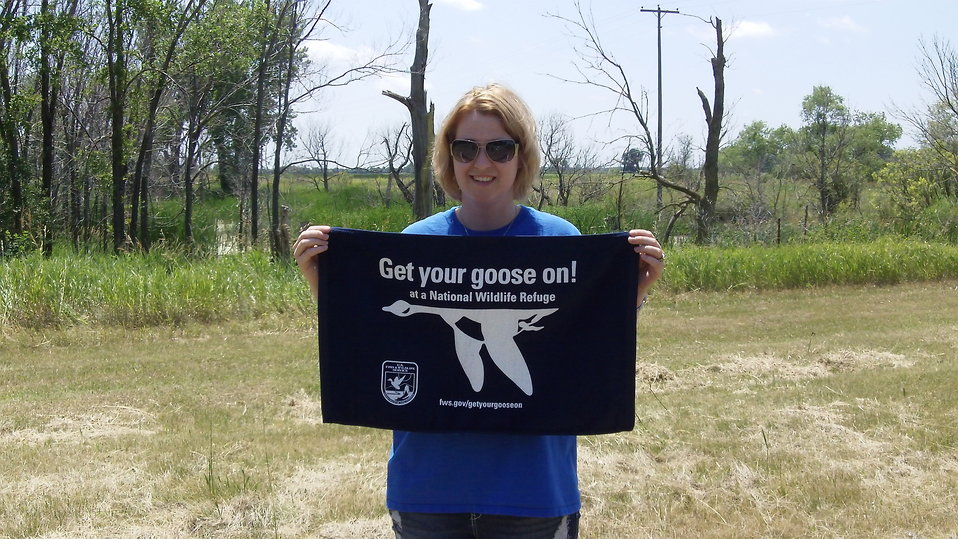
Get Your Goose On!

Photo taken at Huron Wetland Management District in east-central South Dakota.